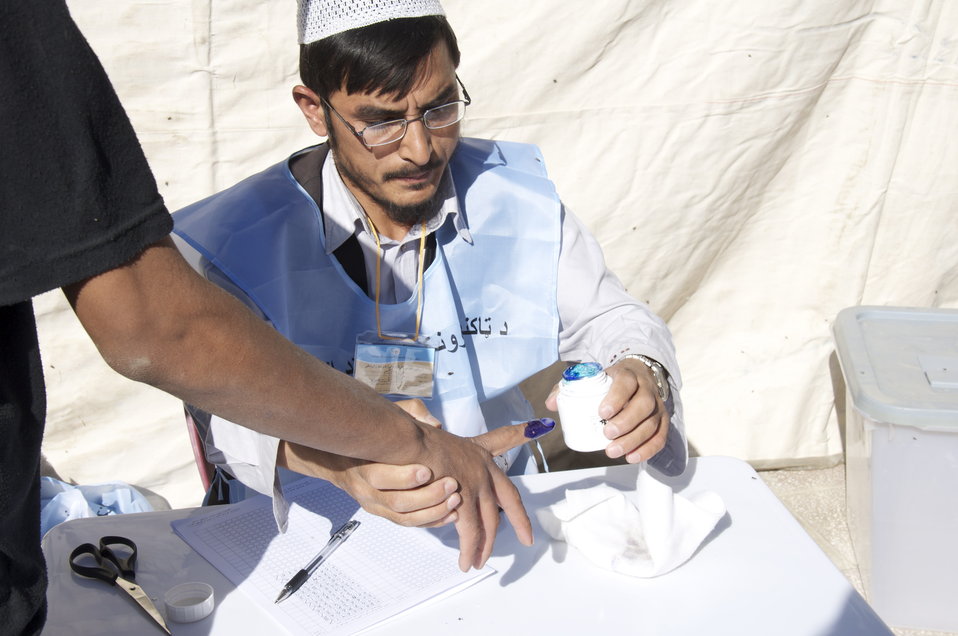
Voter Inks His Finger